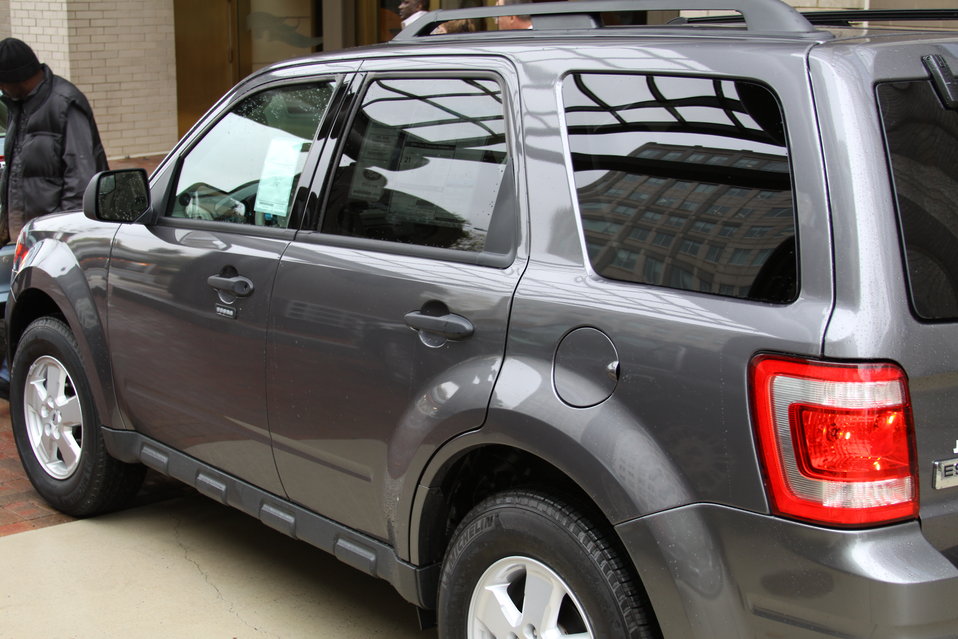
FCC Official Vehicle Tour